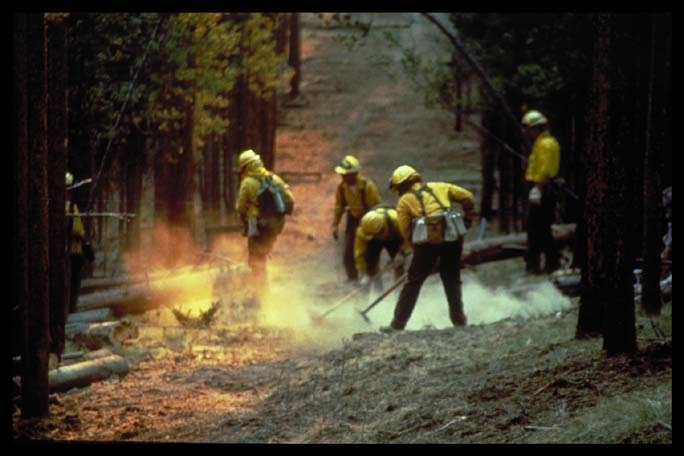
Line construction